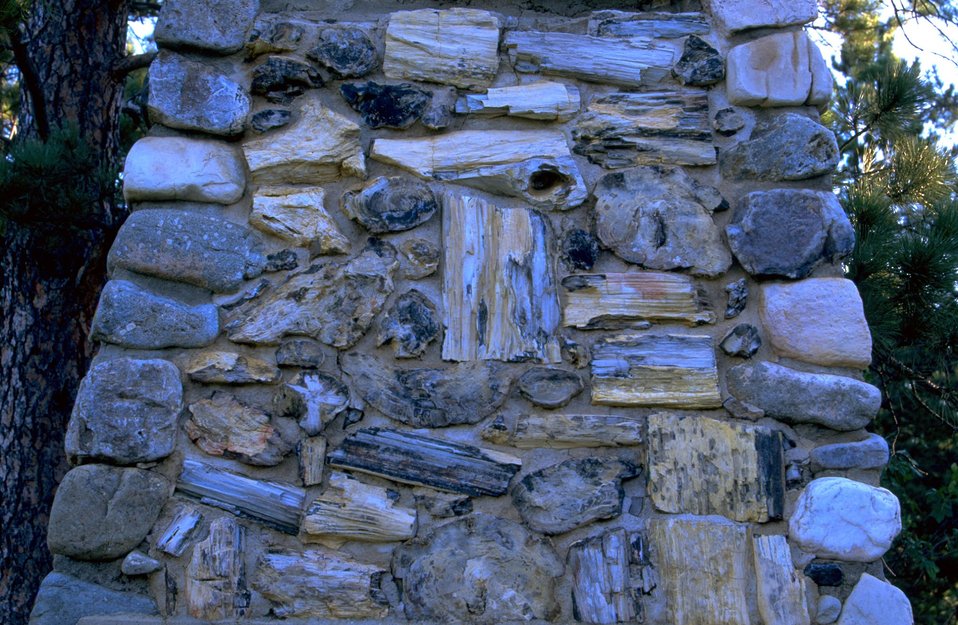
Camp Fechner, CCC Camp, Officer Quarters chimney